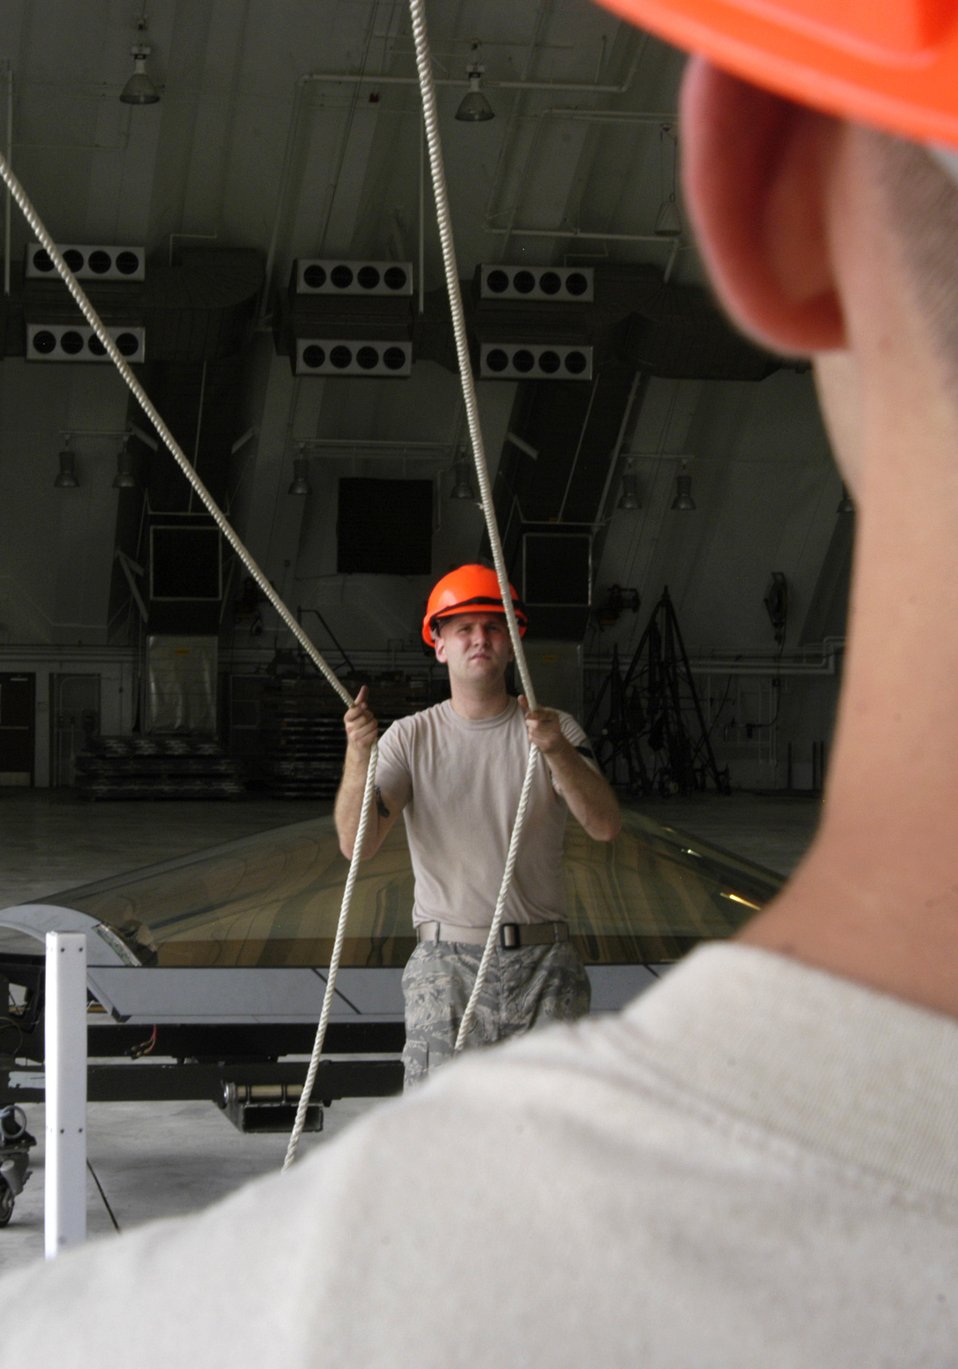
Egress technicians keep raptor pilots covered

Senior Airman Ryan Ott and Staff Sgt. Tim Sullivan guide a canopy onto an F-22 Raptor at Andersen Air Force Base Feb. 18. Members of the 90th Expeditionary Fighter Squadron and the 36th Expeditionary Maintenance are deployed out of Elmendorf AFB, Alaska, with more than 250 Airmen in support of the Pacific theater security package. Sergeant Sullivan and Airman Ott are 36th Expeditionary Maintenance Squadron F-22 egress and systems specialists.